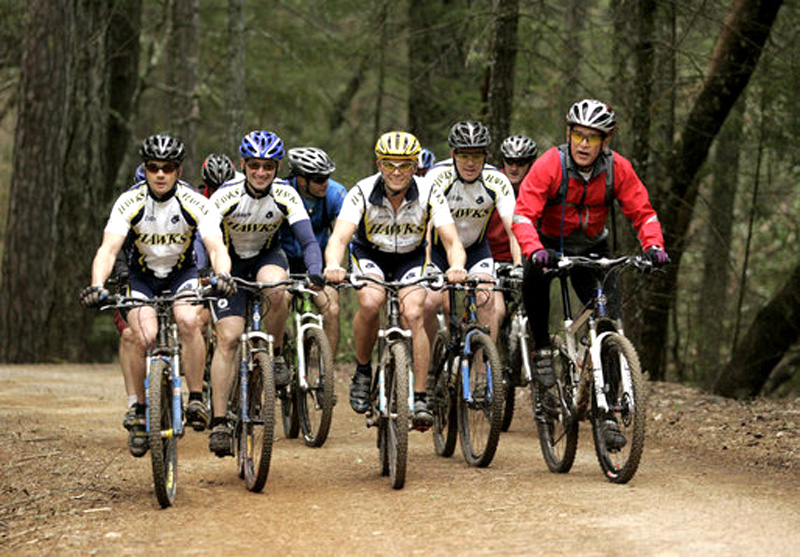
Travis cyclists pedal with president

(Left to right) Staff Sgt. Dustin Diede, Capt. James Weinstein, 1st Lt. Barton Boma and Staff Sgt. Brian Young, ride alongside President George W. Bush on a trail in Napa Valley on Saturday, April 22, 2006. The president invited the four Airmen -- members of the Hawks Mountain Bike Club at Travis Air Force Base, Calif. -- to ride with him during his visit to Northern California.